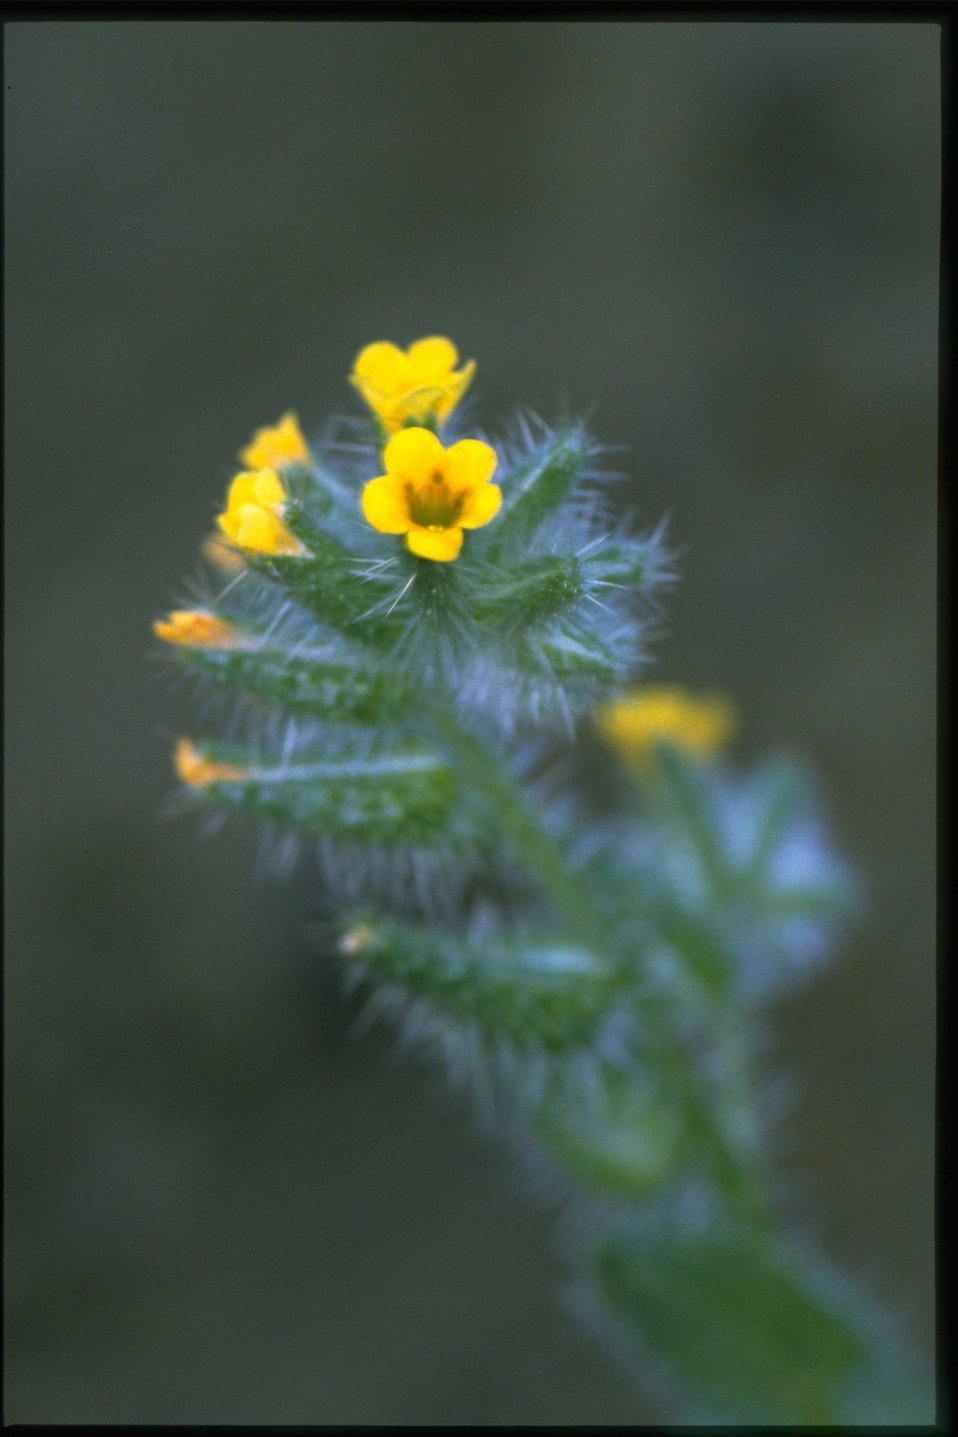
Closeup shot of .